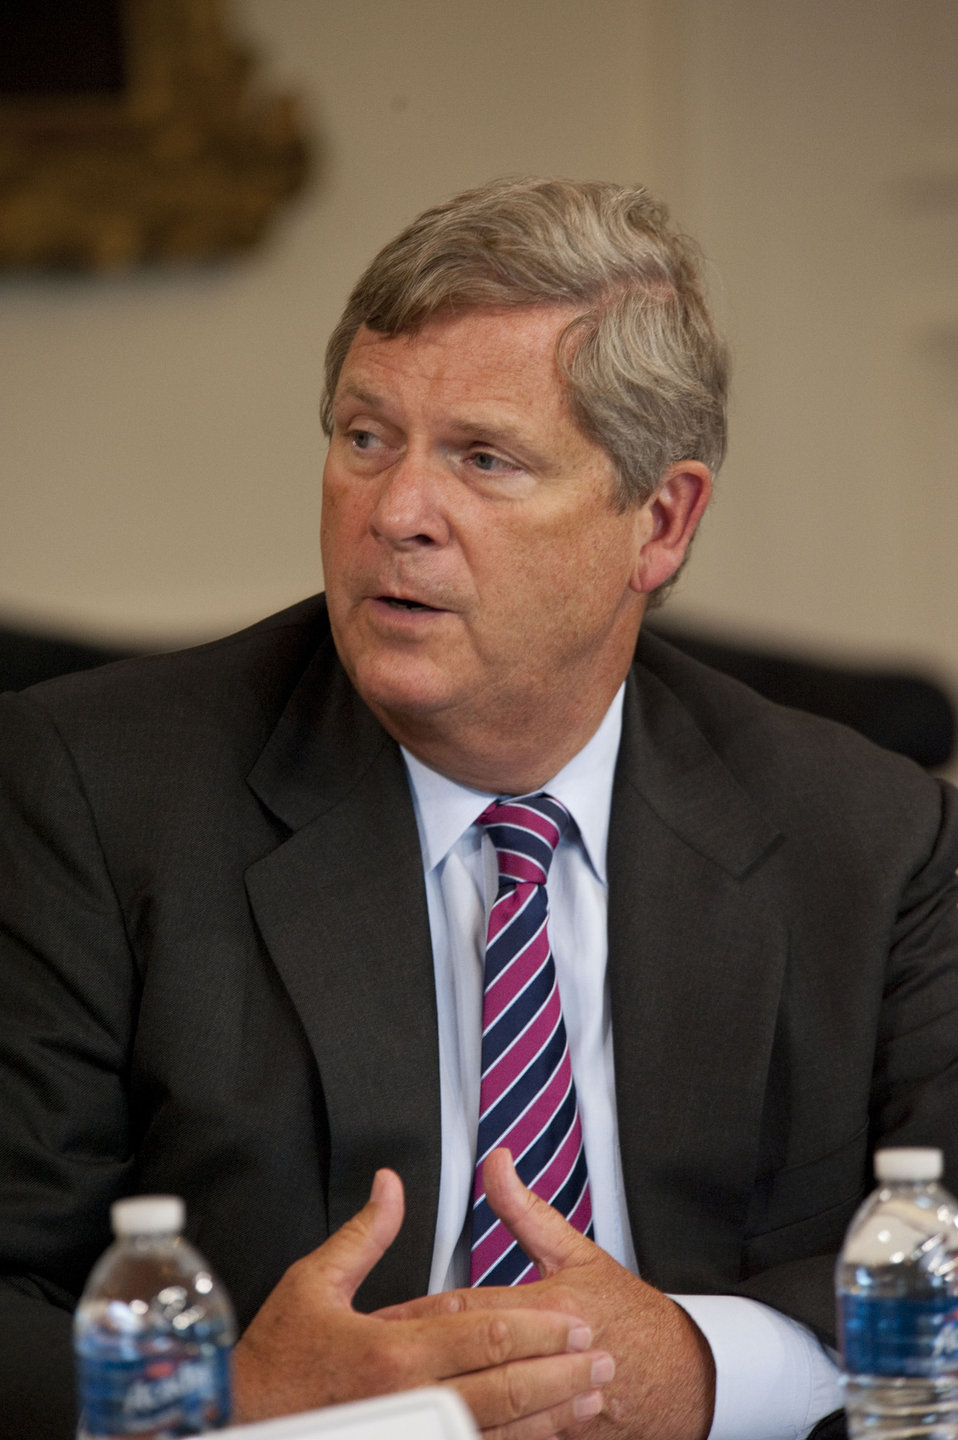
Agriculture Secretary Tom Vilsack meeting with Maryland Agricultural Leaders for a round table discussion in Annapolis, MD, on Thursday, July 21, 2011.